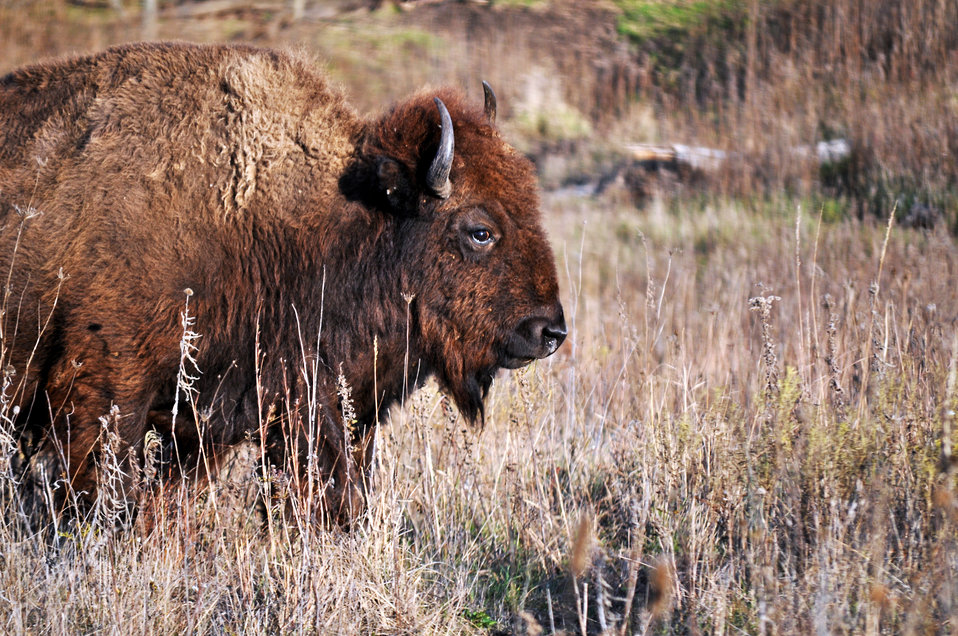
Bison at Dunn Ranch, an a prairie restored by The Nature Conservancy in northwest Missouri.